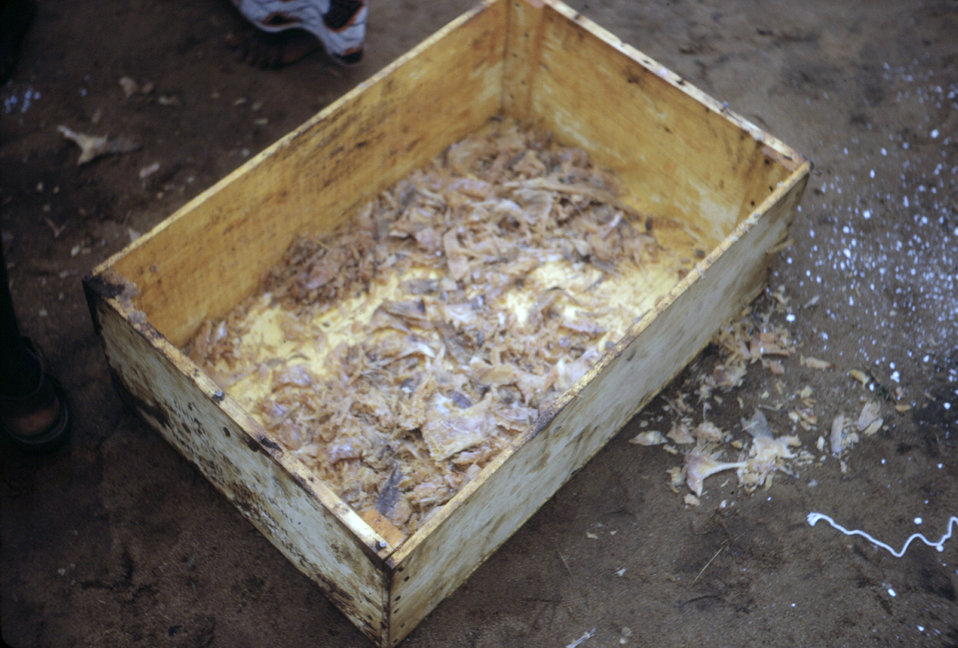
This 1968 photograph showed a nearly empty box of dried fish that was being distributed to nutritionally deprived refugees of the Nigerian-Biafran civil war.